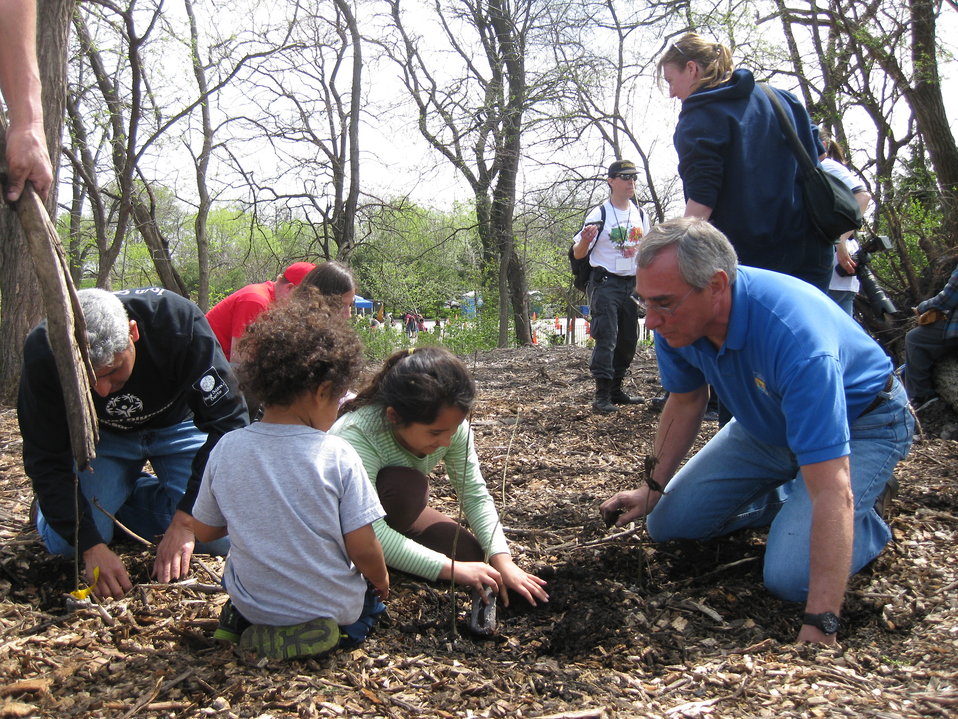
R3 RD Tom Melius coaches planting

Chicago Park District Burnham Corridor Community Planting Day
May 10, 2014
Photo by USFWS; Louise Clemency